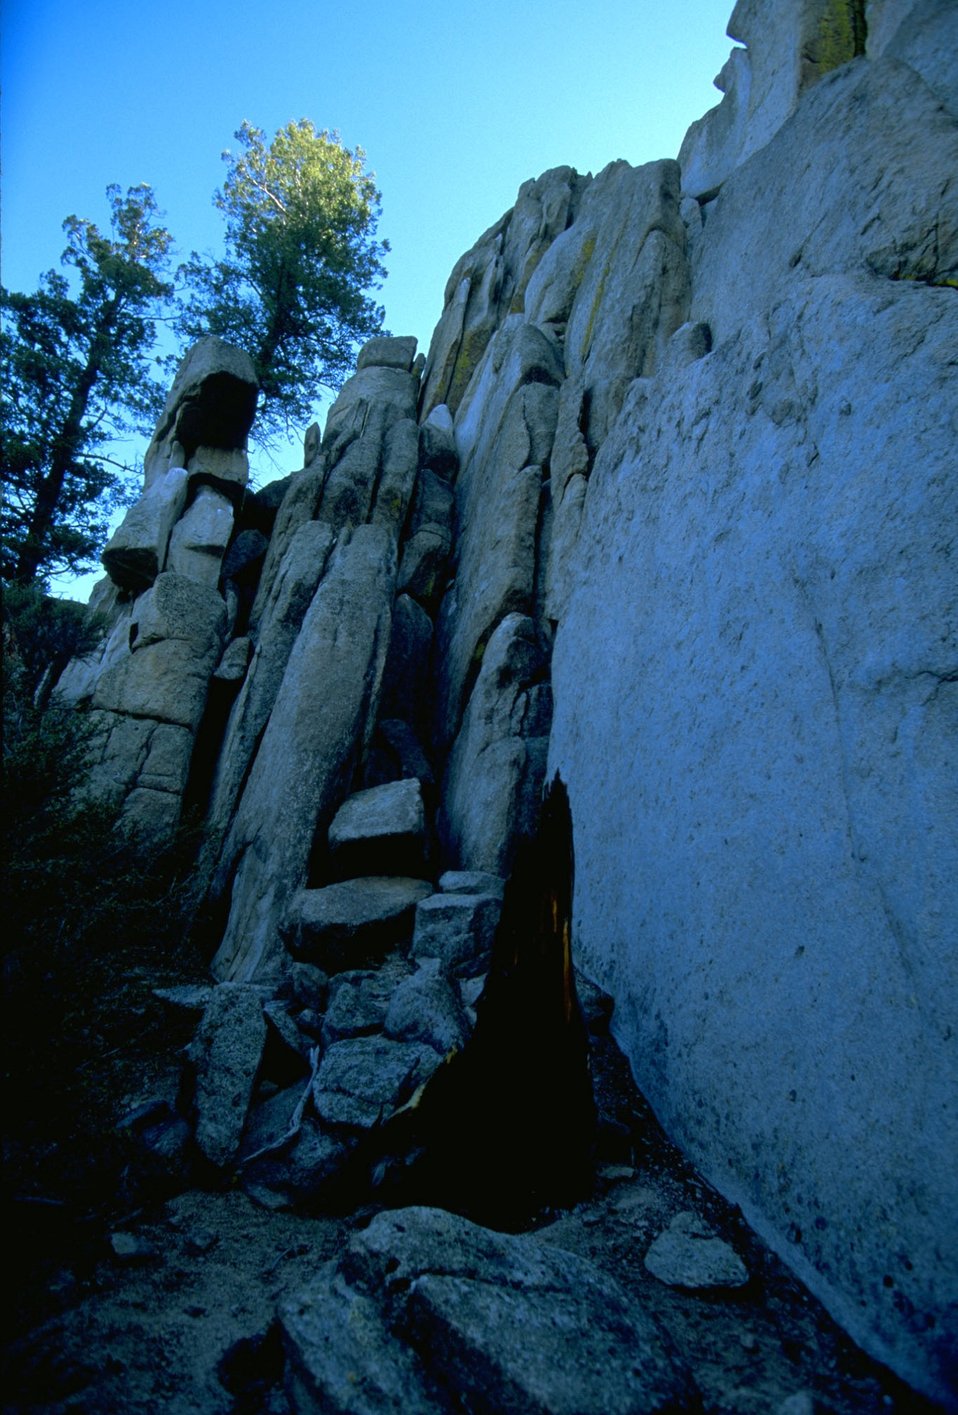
Rock formations